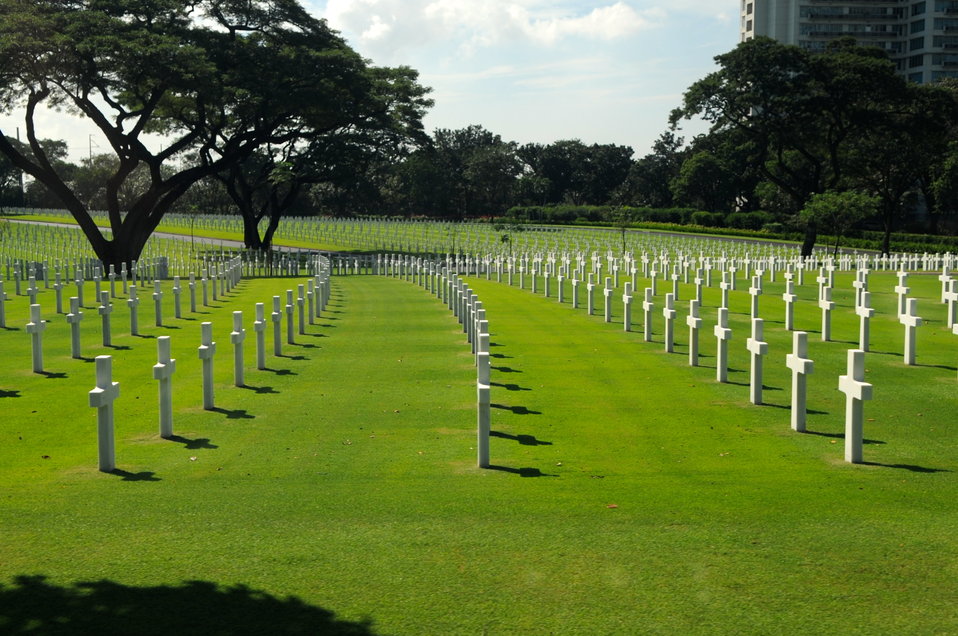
Crosses Mark 17,000 American and Filipino Dead at the American Cemetery in Manila

Some of the crosses marking the grave sites of 17,201 Americans and Filipinos line the American Cemetery in Manila, Philippines, as U.S. Secretary of State John Kerry arrives for a visit on December 17, 2013.